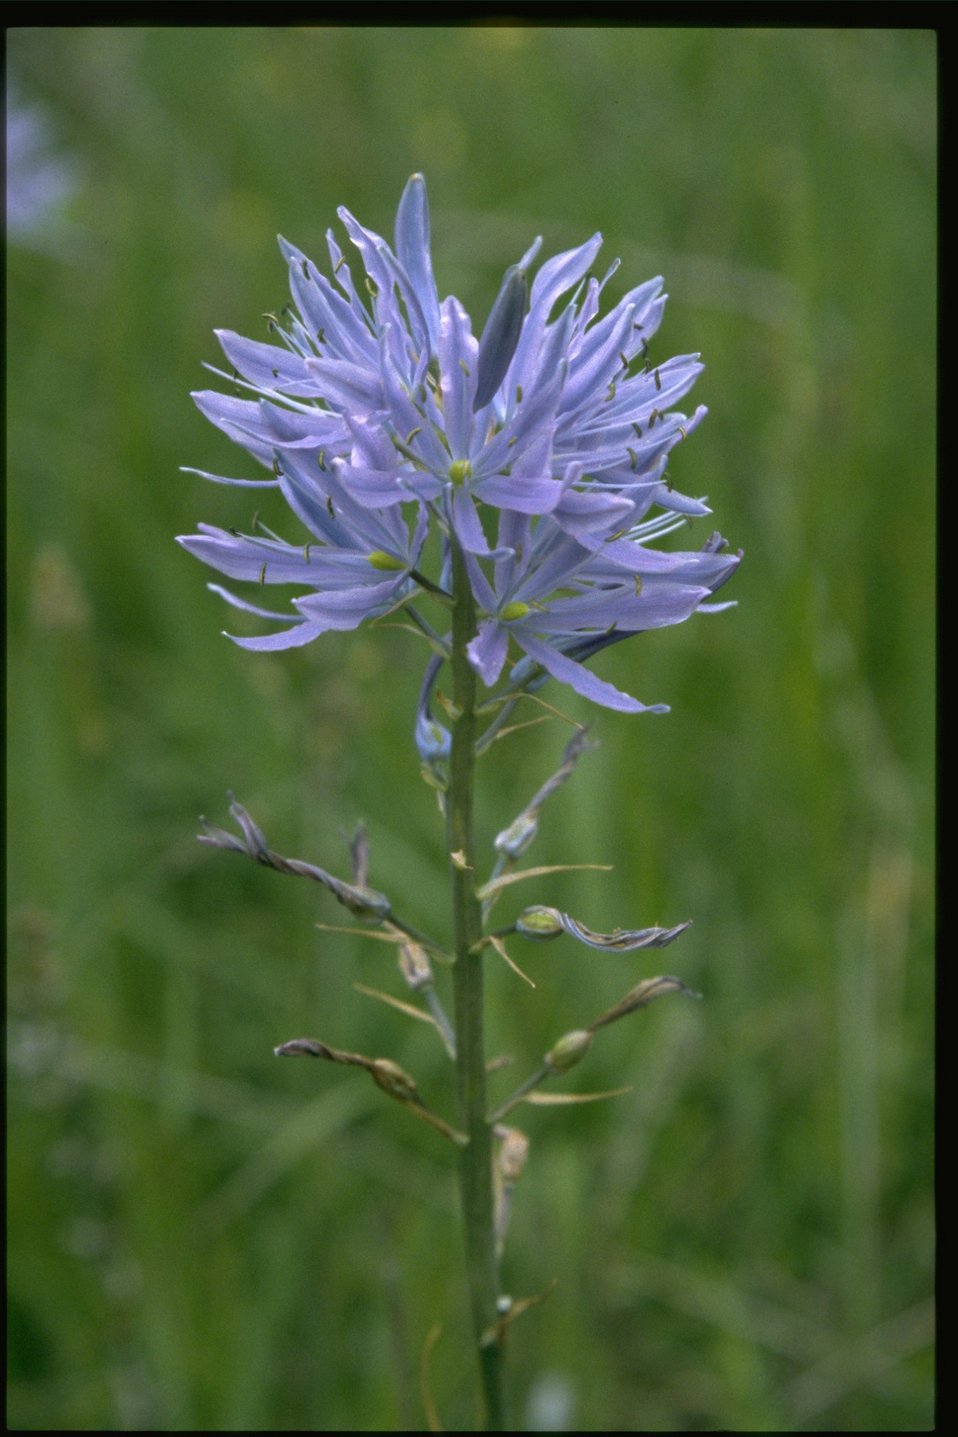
Medium shot of Camassia quamash.